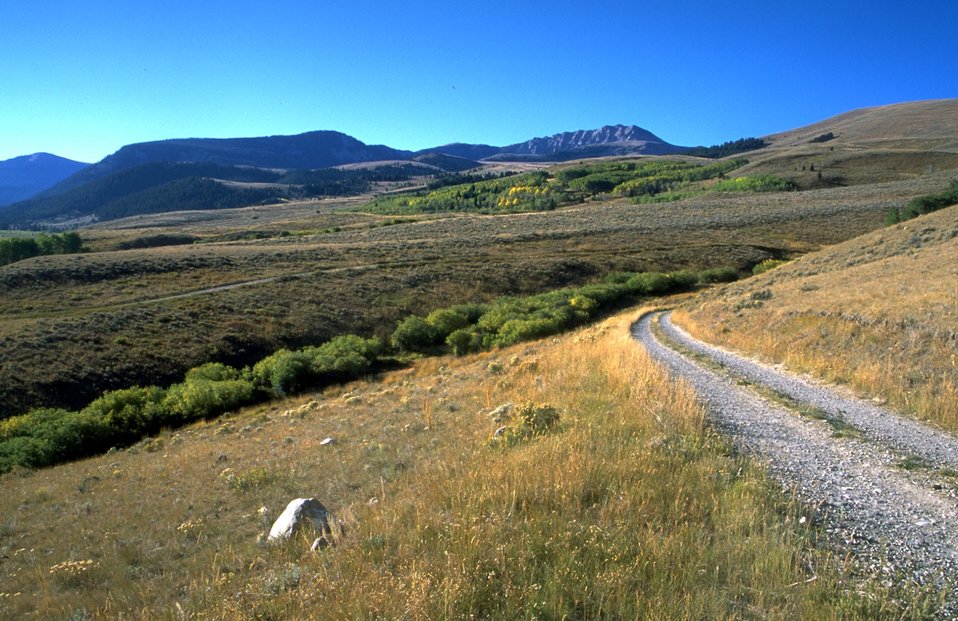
Access Road